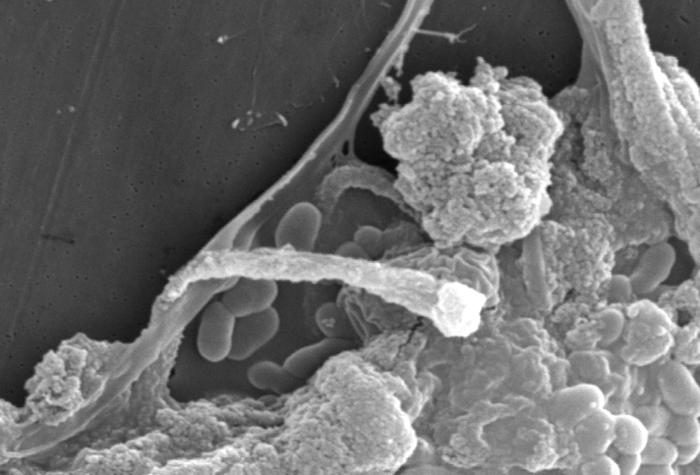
This scanning electron micrograph (SEM) of an untreated water specimen extracted from a wild stream mainly used to control flooding during inclement weather, revealed the presence of unidentified organisms, which included bacteria, protozoa, and algae. In this particular view, a mass of gelatinous biofilm had enmeshed numbers of microorganisms, including amoebae and bacteria. For a colorized version of this image, see PHIL 11707.